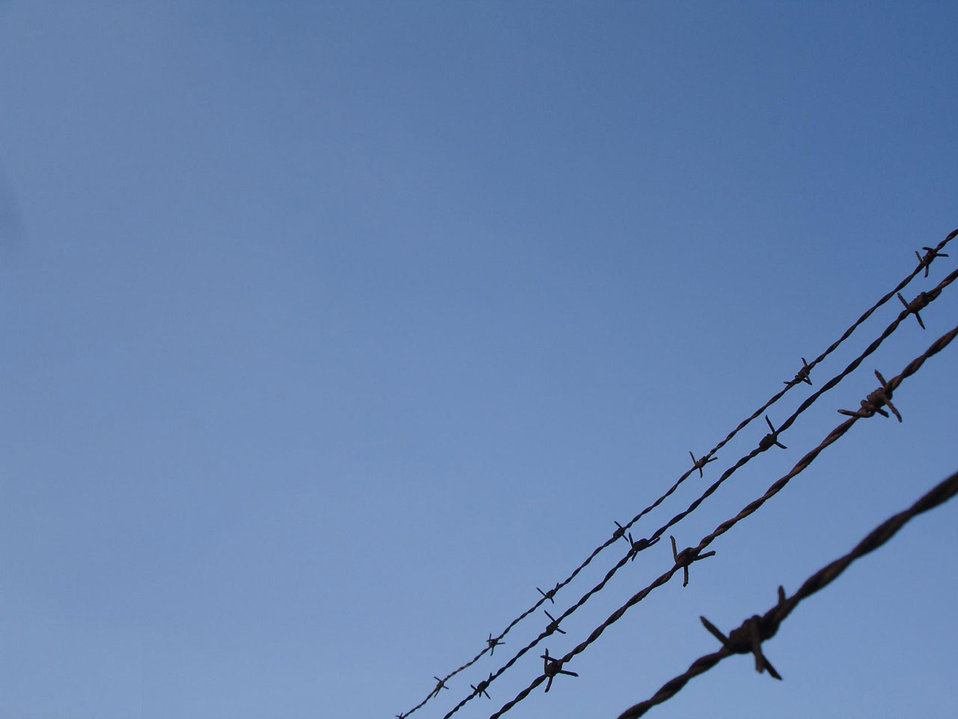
Barbed wire.